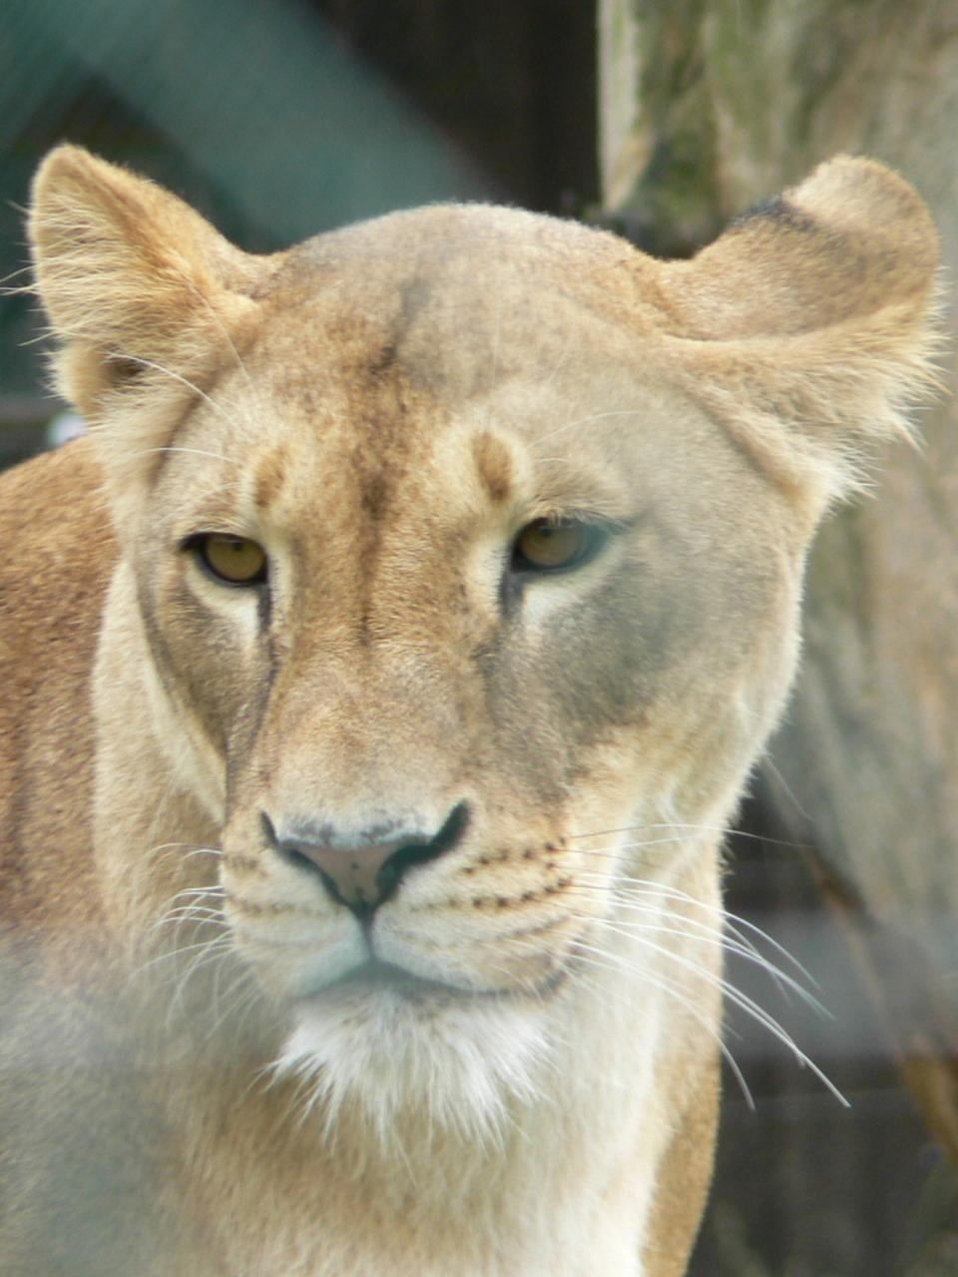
English:
Image title: Lion face female Image from Public domain images website, http://www.public-domain-image.com/full-image/fauna-animals-public-domain-images-pictures/lion-public-domain-images-pictures/lion-face-female.jpg.html